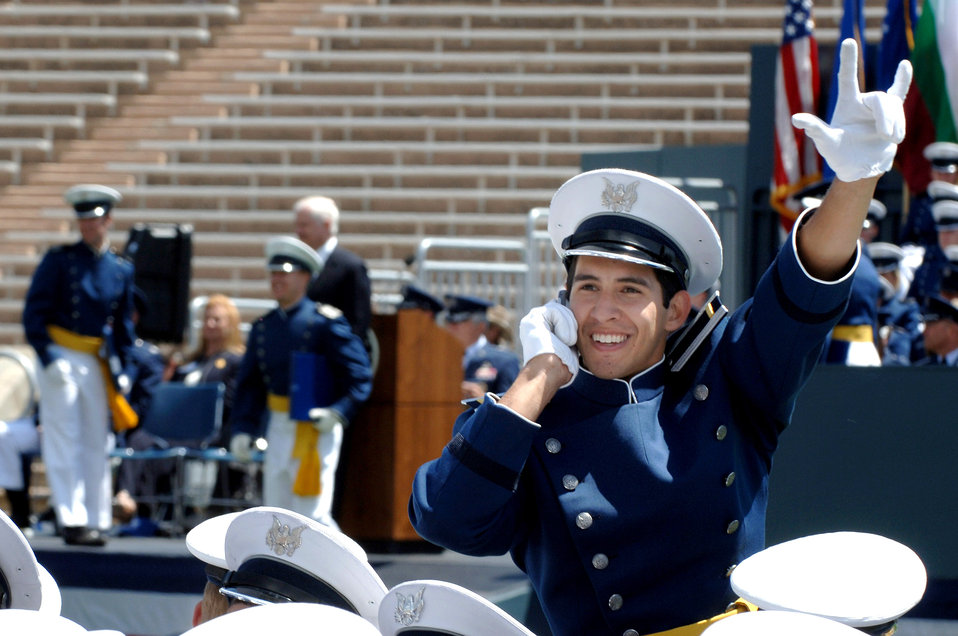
From cadet to lieutenant

One of the Air Force's newest second lieutenants waves to the crowd after receiving his degree and commission from the U.S. Air Force Academy May 30 in Colorado. The ceremony in Falcon Stadium ends the cadet careers and begins the Air Force careers of 977 new lieutenants.